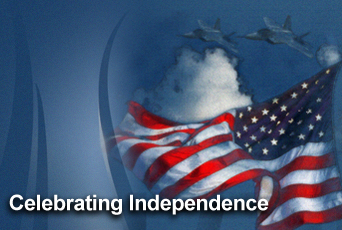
Air Force leaders send Independence Day message

Airmen today continue to fight for the ideals on which this nation's freedoms were founded. Just as the Minutemen who were prepared to fight at a moment's notice during the Revolutionary War, Airmen today stand ready at home and abroad defending America's freedom this Fourth of July.